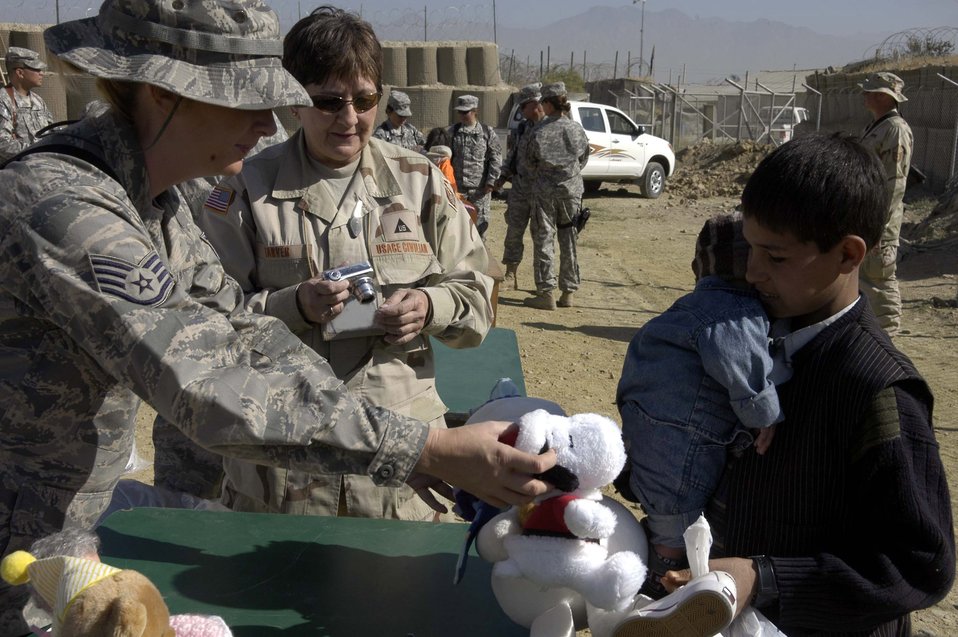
Bagram Airmen help bring better life to Afghan families

Staff Sgt. Tracy Anderson passes out toys to Afghan children during an Operation Care visit to the Korean Hospital Oct. 17 near Bagram Air Base, Afghanistan. Operation Care is an all-volunteer effort that provides clothes, school and hygien supplies, toys and candy to Afghan villagers.